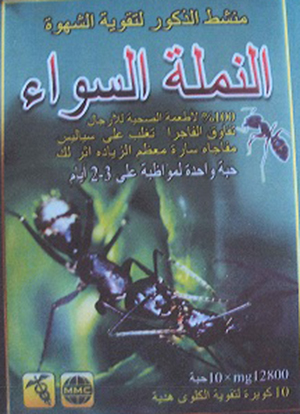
20140501163211496pic2 Page 2